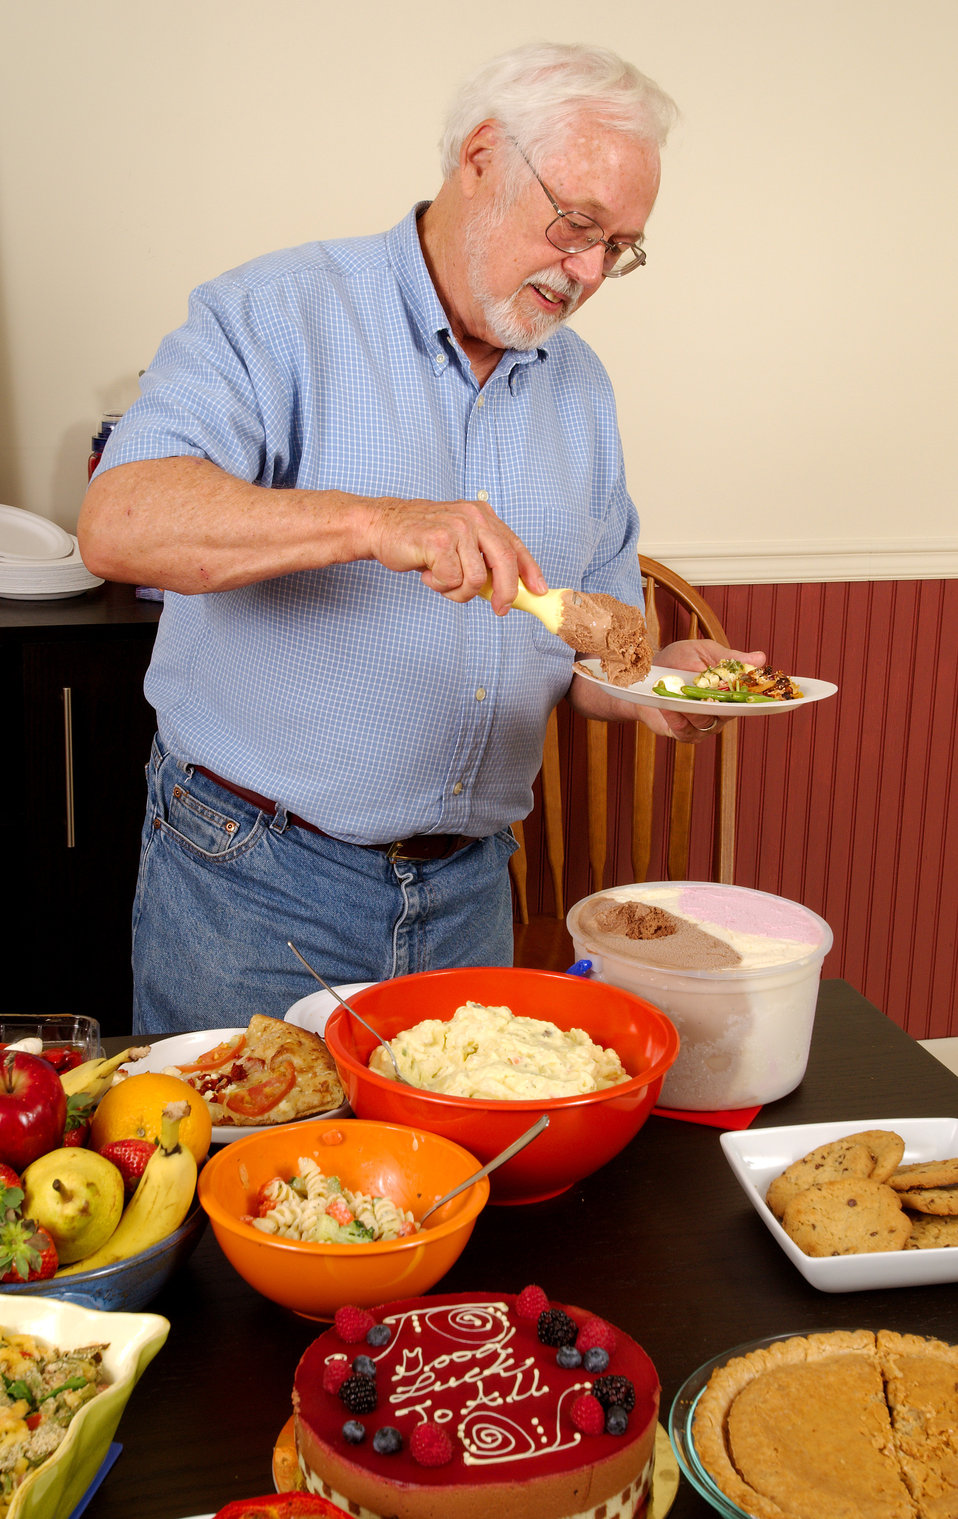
Serving food

This image depicts a middle-aged man serving himself from a dining table, atop which was plated a large quantity of foods representing a number of different food groups: grains, fruits, vegetables, milk products, meats / poultry / fish, and nuts / seeds / legumes. Here, he was about to add what appears to be some ice cream to his plate.